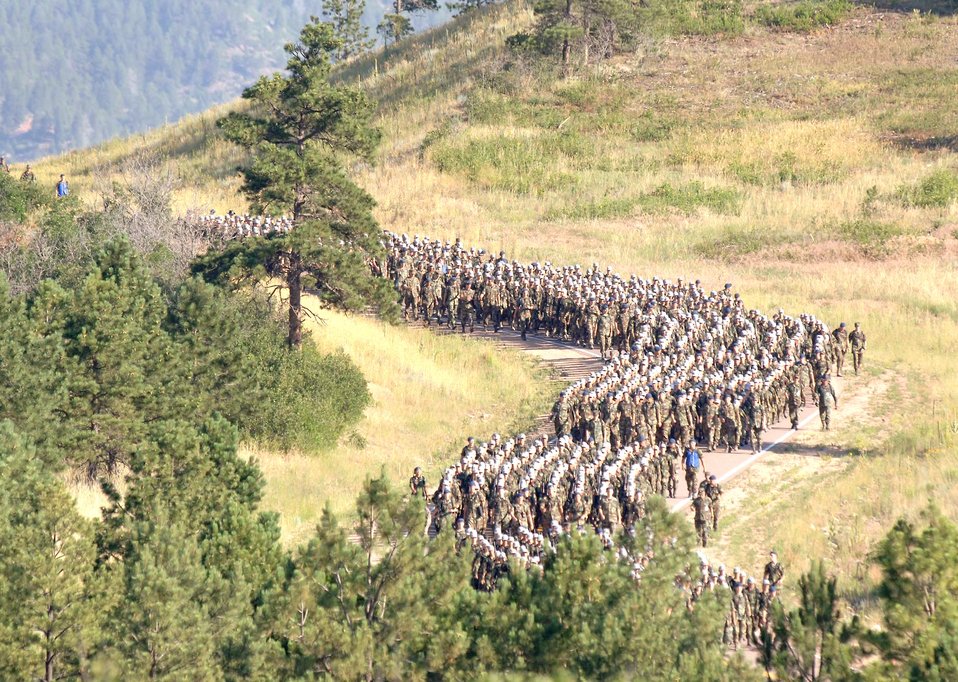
Basic cadets focus on next training obstacle

U.S. AIR FORCE ACADEMY, Colo. -- Basic cadets of the class of 2009 march out to Jacks Valley to begin their final phase of basic training. The basic cadets are living in tents for two weeks while participating in a variety of military training exercises before returning to begin the academic year.